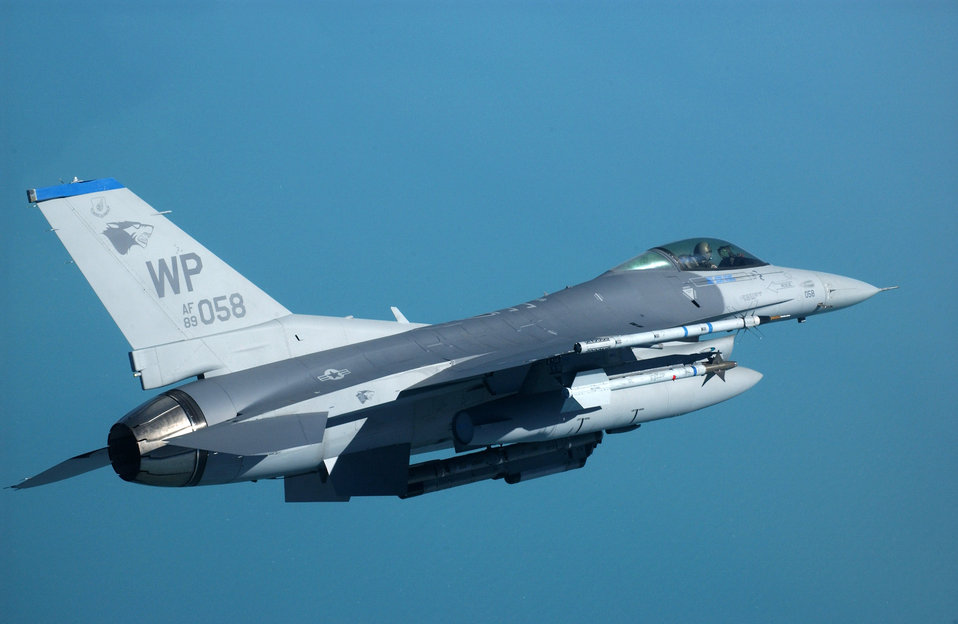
Live fire

An F-16 Fighting Falcon controls the range off the coast of South Korea during an AIM-9 Sidewinder live-fire exercise Aug. 18. It is the first time pilots have fired AIM-9s in Korea. The F-16 is assigned to the 80th Fighter Squadron at Kunsan Air Base, South Korea.